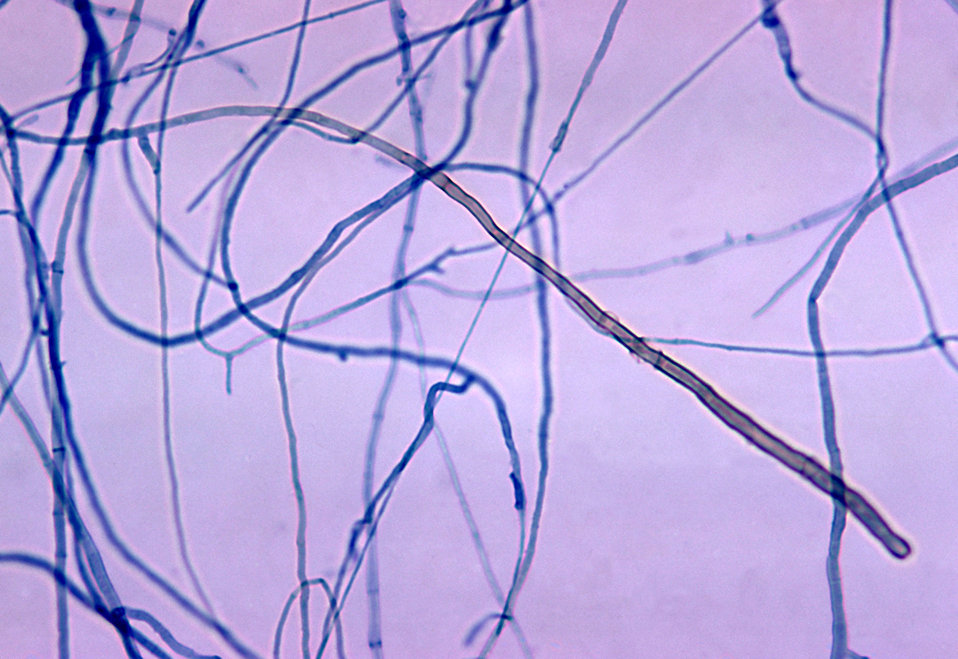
This photomicrograph shows a conidiophore and conidium of the fungus Corynespora cassiicola.